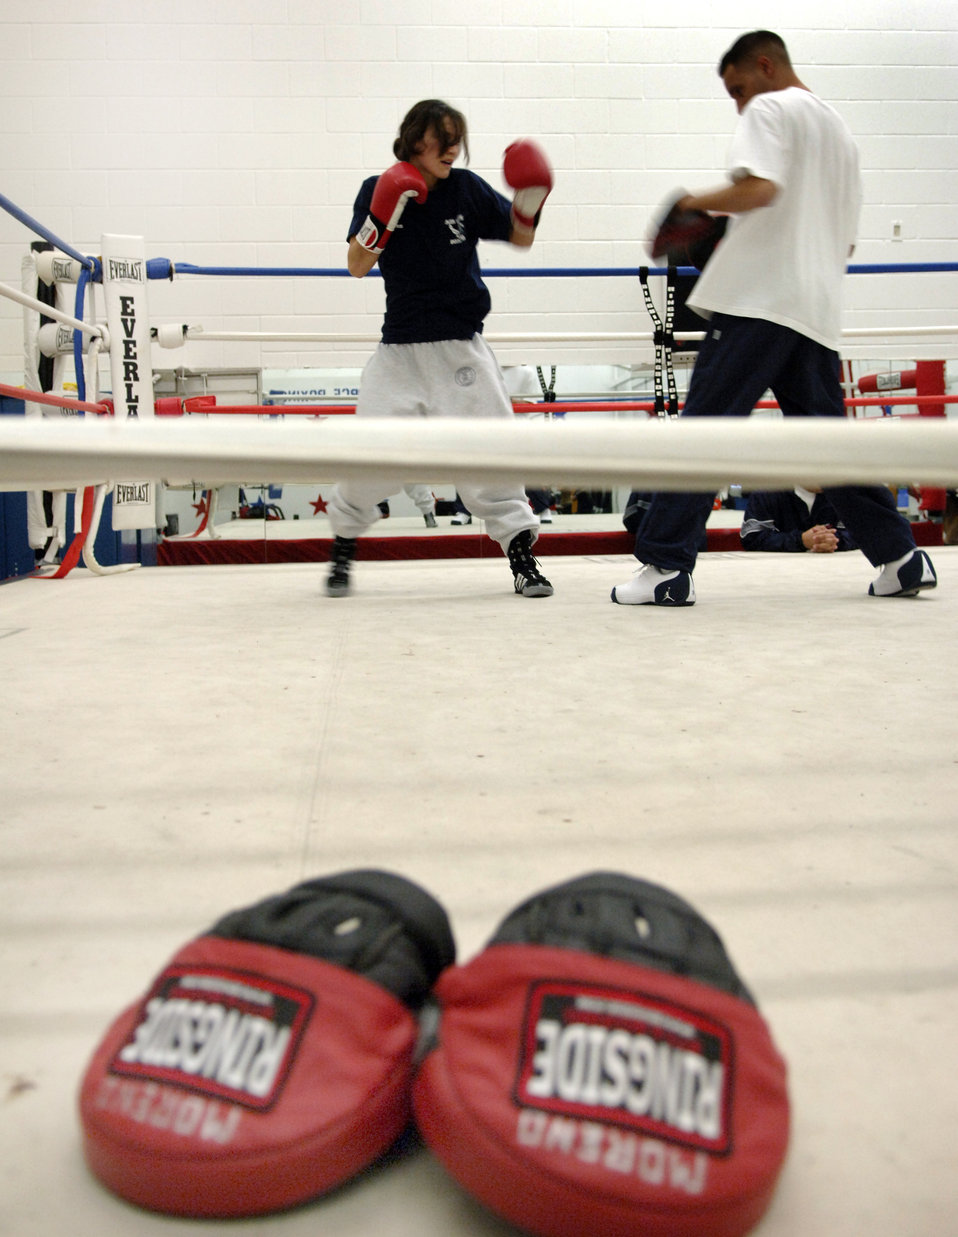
Boxing it out

SAN ANTONIO (AFPN) -- Senior Airman Celsa Reyes throws punches during simulated rounds while Staff Sgt. Steven Franco, assistant coach, instructs at the Air Force Boxing Training Camp here. Twenty-four Airmen are trying out for the nine spots to represent the Air Force at the Armed Forces Tournament.